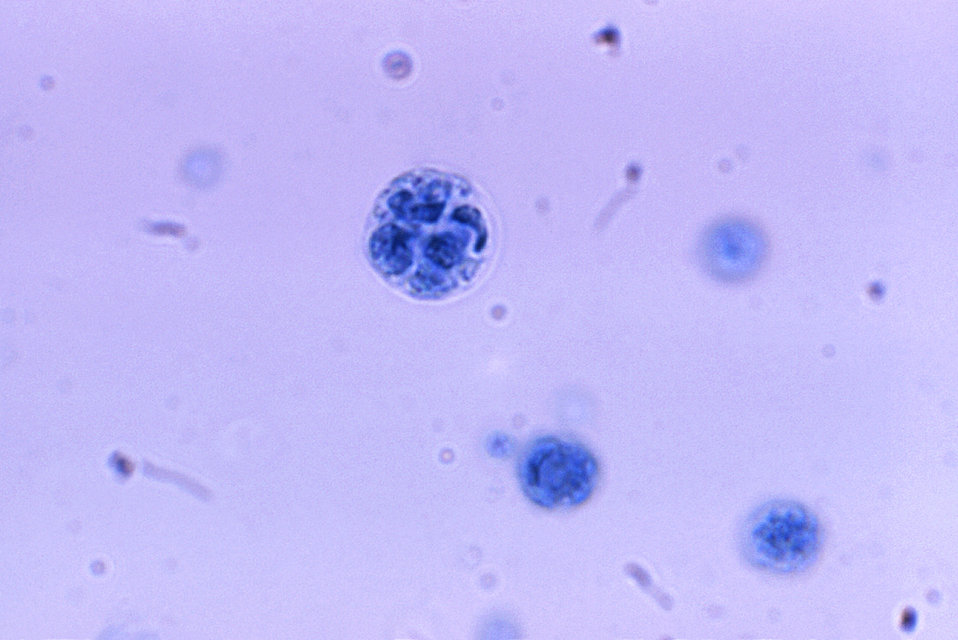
At a magnification of 1125X, this photomicrograph revealed the presence of a number of Prototheca zopfii algal organisms.